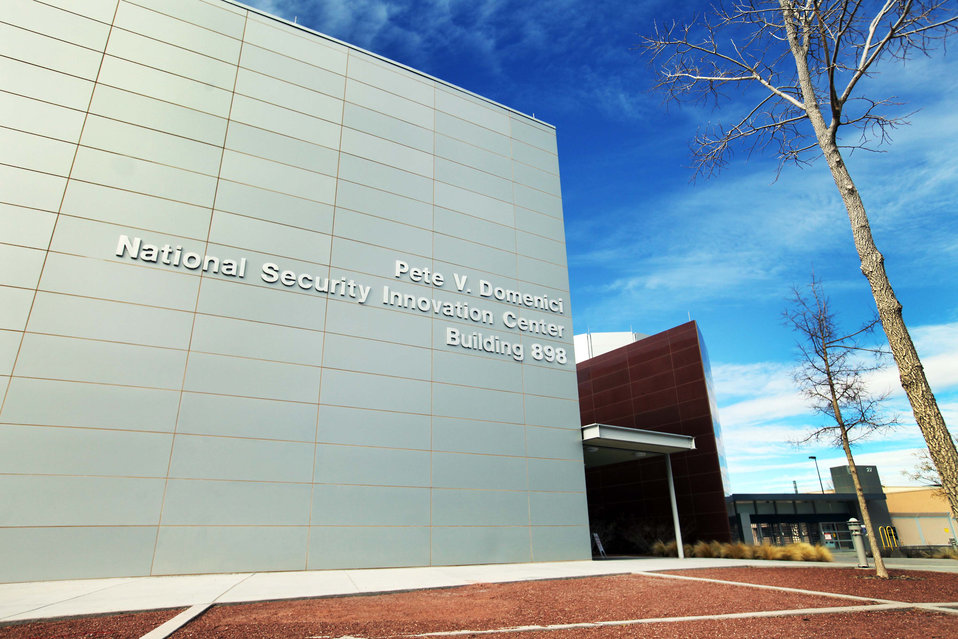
The former Weapons Integration Facility building which was rededicated as the Pete v Domenici National Security Innovation Center.